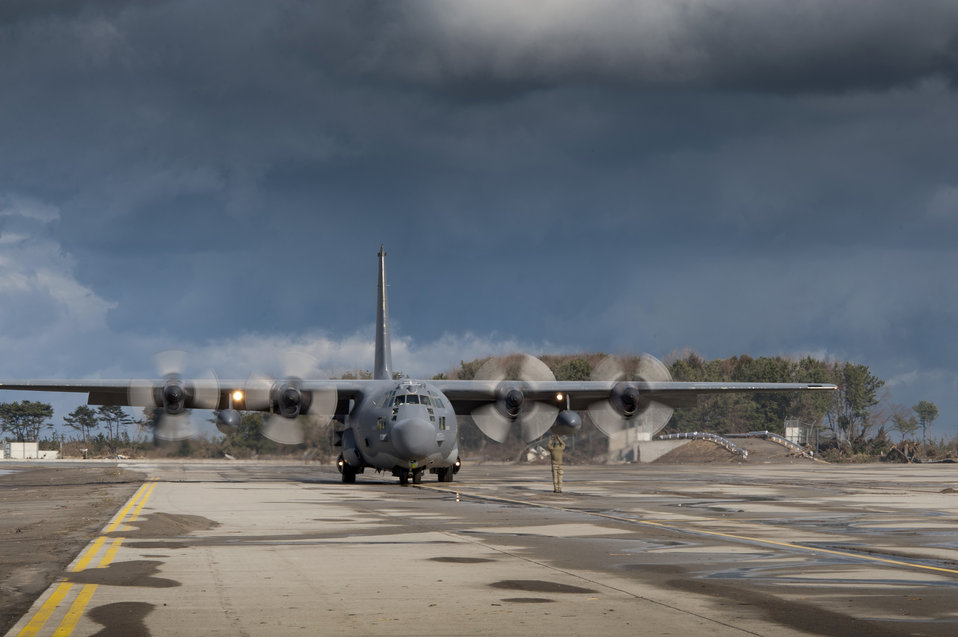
Headline

A U.S. Air Force combat controller with the 320th Special Tactics Squadron (STS) marshals a U.S. Air Force MC-130H Combat Talon II aircraft after a successful landing at Sendai Airport, Japan, March 16, 2011. Members of the 320th STS from Kadena Air Base, Japan, deployed to Sendai Airport to help clear the runway and make it ready for fixed-wing aircraft traffic.